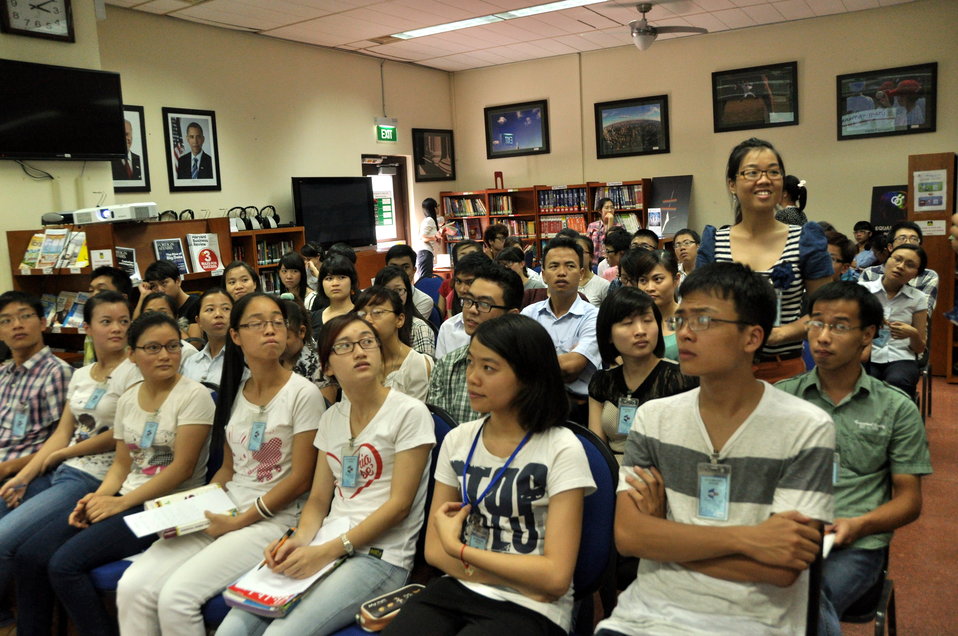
Climate Change Talk at the American Center

Hanoi, May 28, 2013.